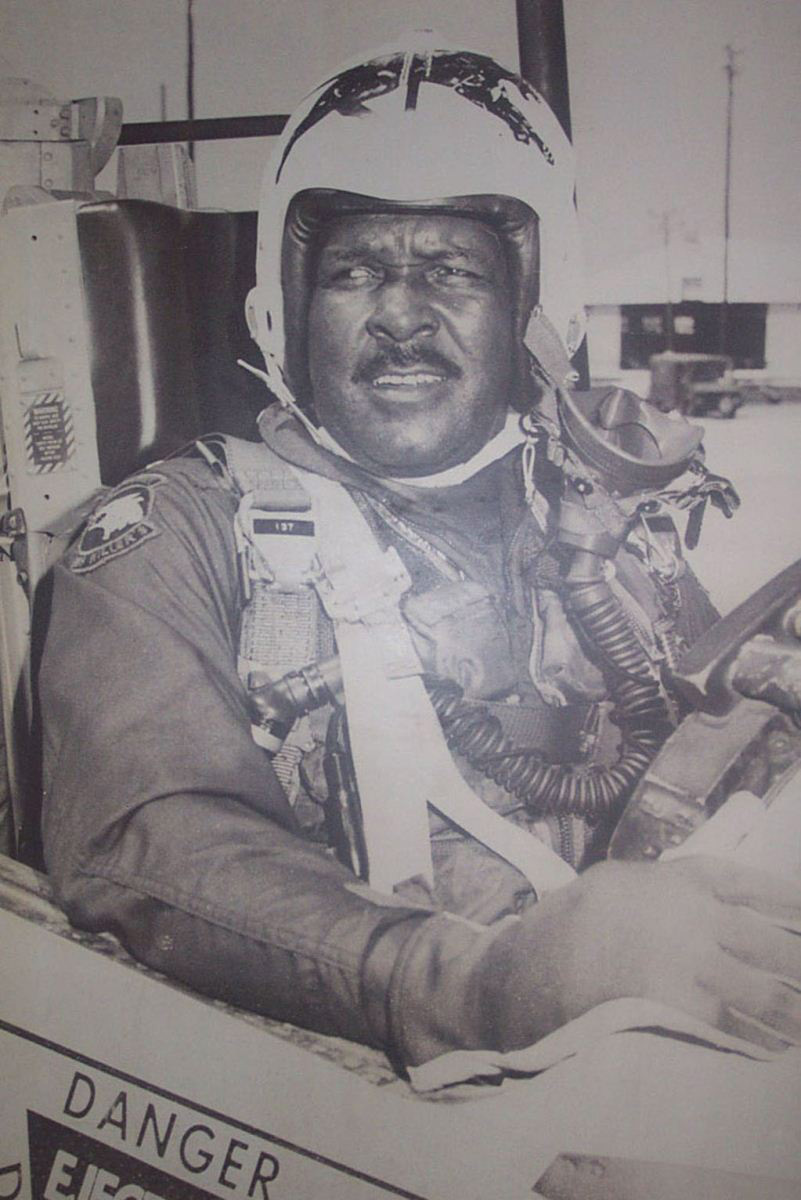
Gen. Daniel

Daniel